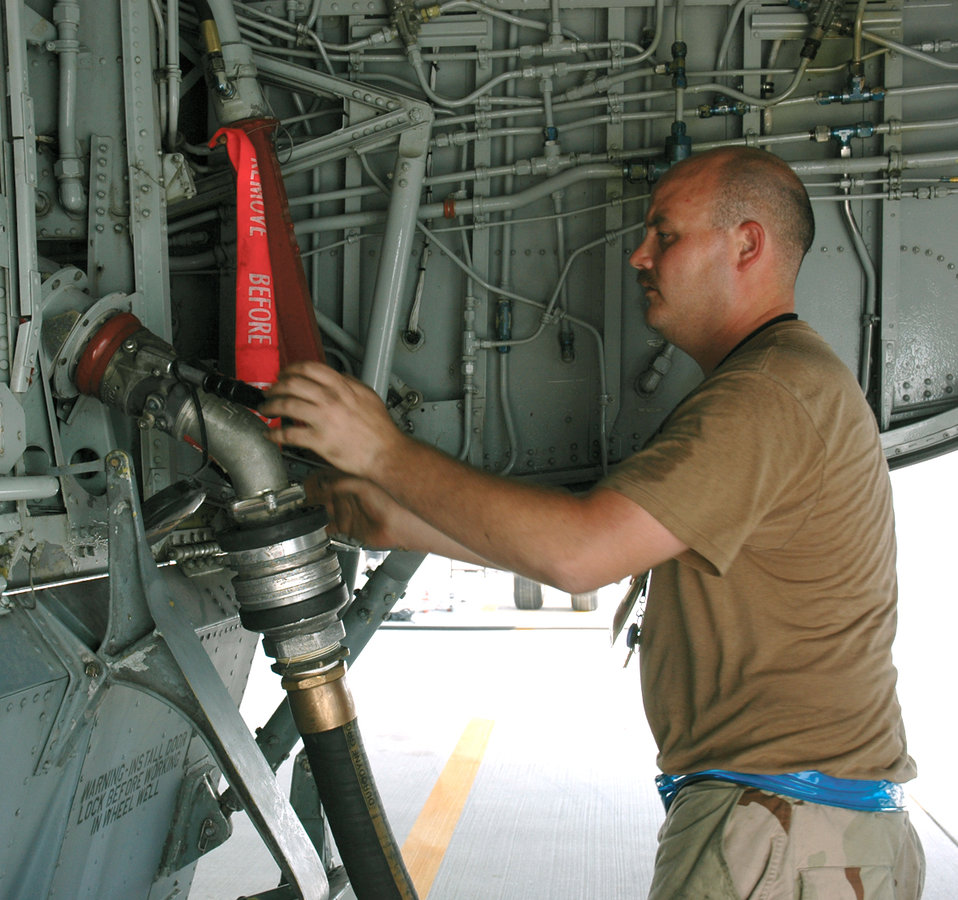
340th maintainers keep pace with optempo

Staff Sgt. Marcus Franklin connects the refueling hose to a KC-135 Stratotanker at a forward operating base in Southwest Asia. Sergeant Franklin is a crew chief deployed to the 340th Aircraft Maintenance Unit from MacDill Air Force Base, Fla.